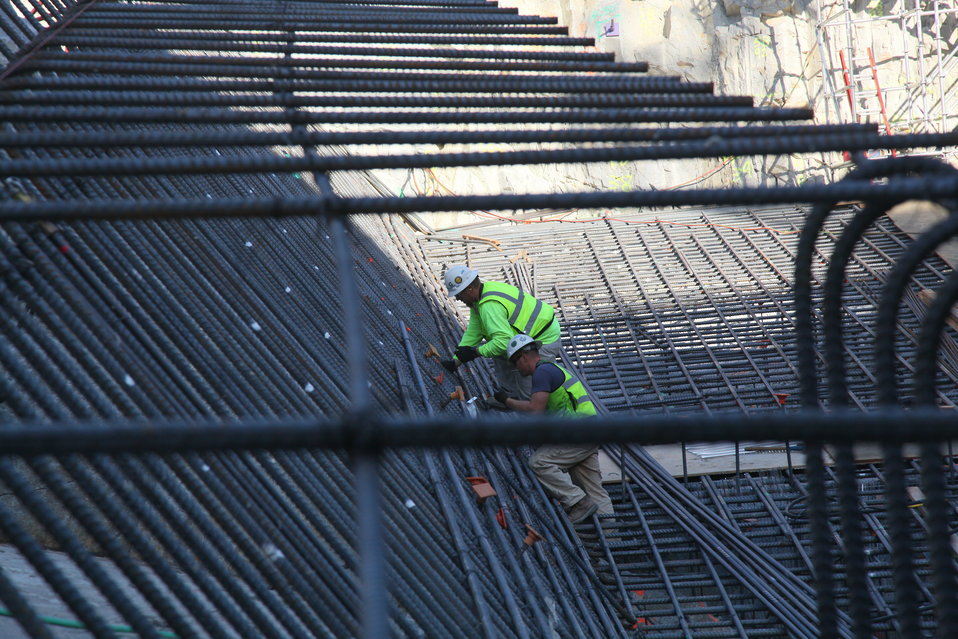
Rebar before concrete

Working in a maze of a steel rebar, contractors for the U.S. Army Corps of Engineers Sacramento District construct a support system for concrete placement for the auxiliary spillway at the Folsom Dam Joint Federal Project in Folsom, Calif., June 14, 2012. The Folsom Dam Joint Federal Project is a joint effort of the Corps, U. S. Bureau of Reclamation, the Central Valley Flood Protection Board and the Sacramento Area Flood Control Agency to improve the safety of the current dam and reduce flood risk for the greater Sacramento area.